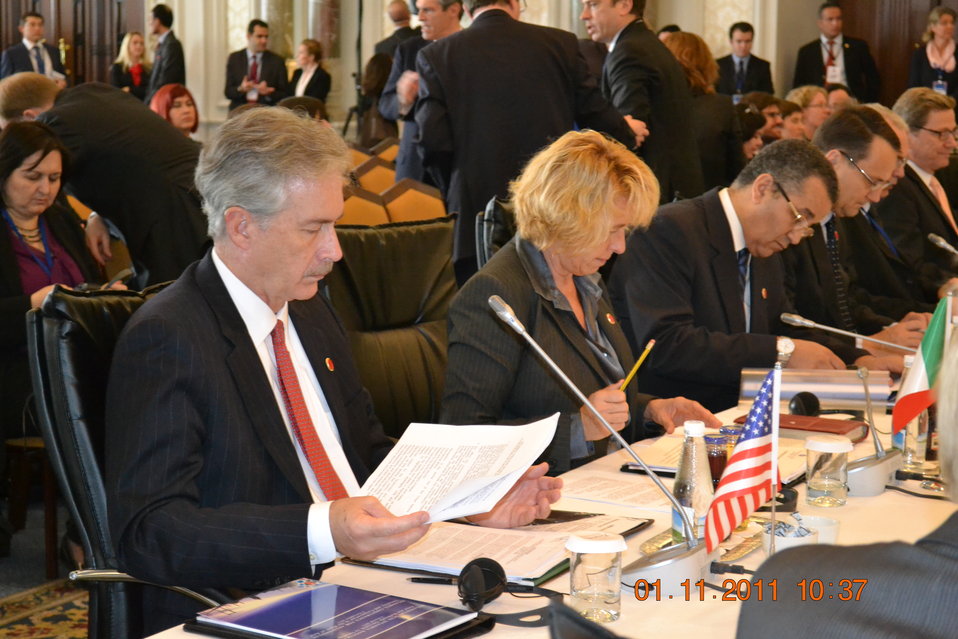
Deputy Secretary Burns Delivers Remarks

U.S. Deputy Secretary of State William J. Burns delivers remarks during the opening session of Istanbul Conference for Afghanistan in Istanbul, Turkey, on November 1, 2011.